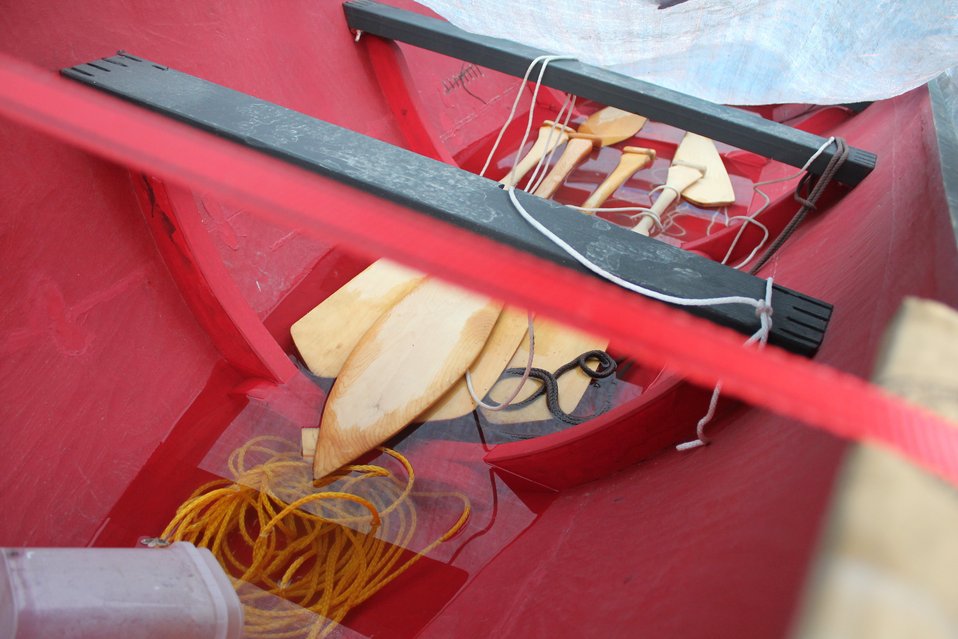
Paddles for cedar boat built in 2009 in Klukwan as part of a major revival of Klingit arts and technology. Boat built from one big log that is repeatedly carved out and burned out.